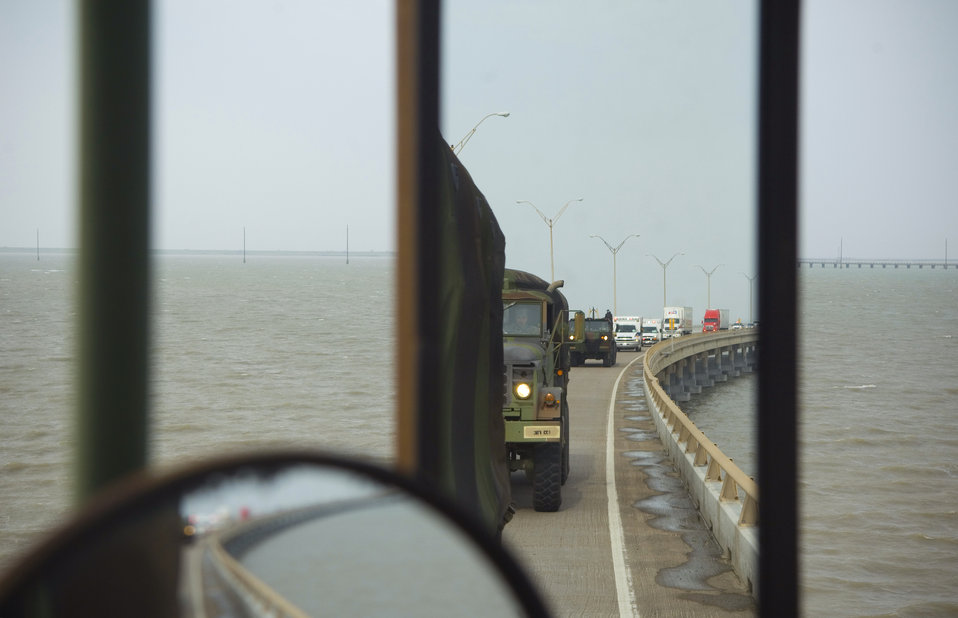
Hurricane Dolly

A Texas task force convoy crosses a two-mile bridge July 24 bringing food, water and ice to the people of South Padre Island, Texas. Hurricane Dolly made landfall at the island.